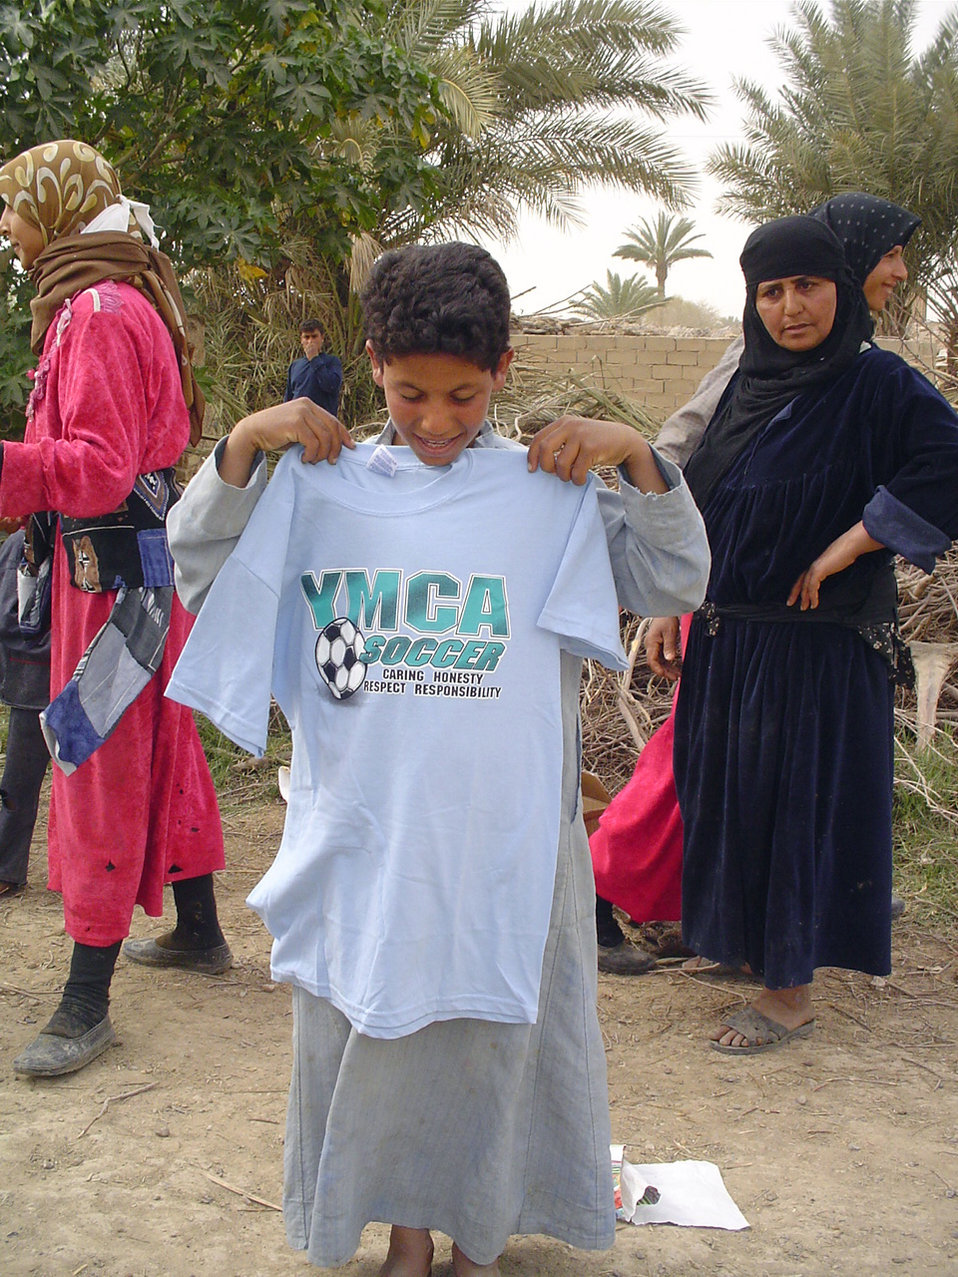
Iraq, Operation Iraqi Freedom, Humanitarian

VEDGHA, Iraq - A young Iraqi admires his new shirt after a team from the 447th Air Expeditionary Group at Baghdad International Airport distributed clothing, shoes, food, toys and medication here recently. Team' from the group conduct the humanitarian-relief missions about once a month.